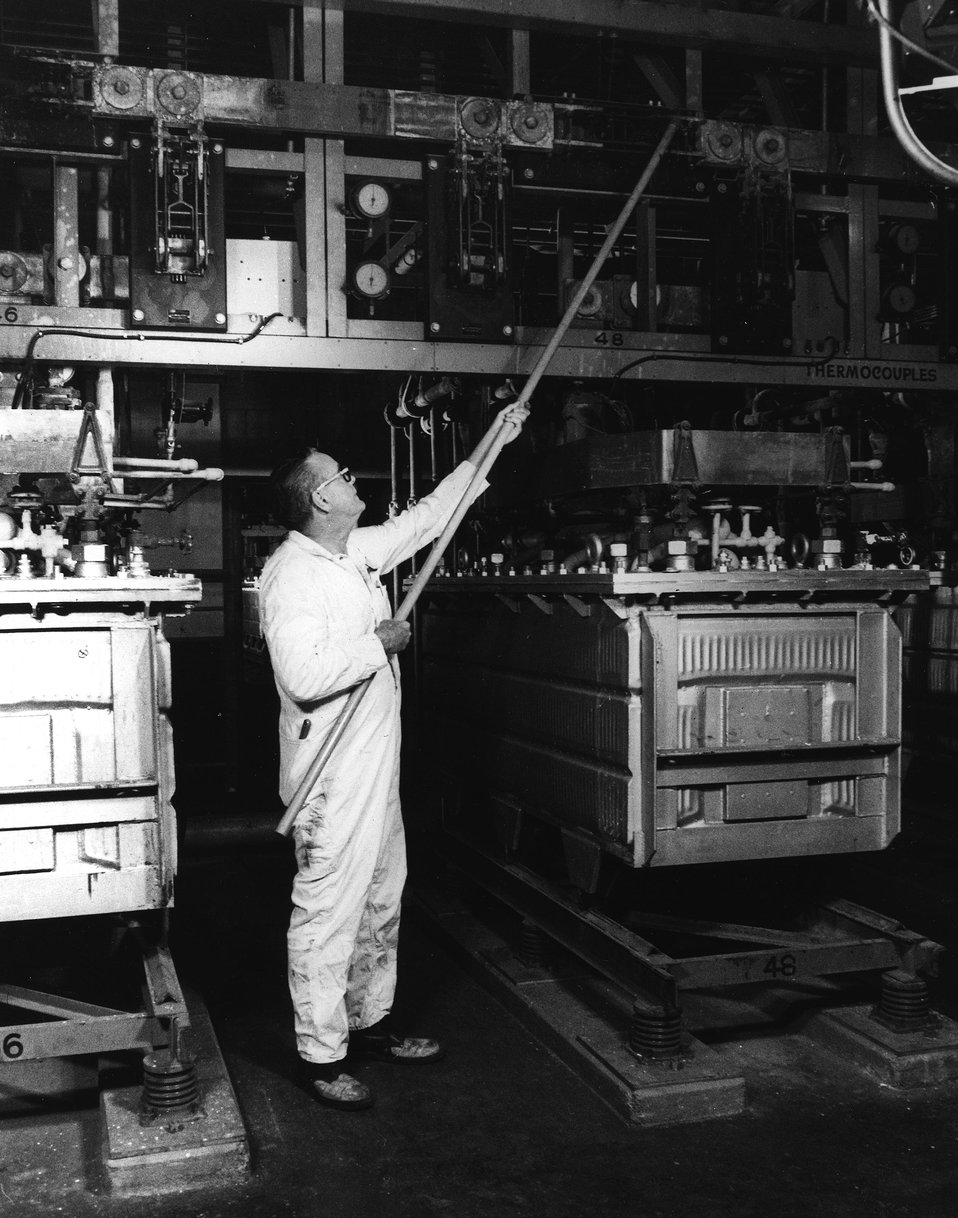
The U.S. Energy Research and Development Administration maintains a uranium feed material production facility at its Paducah (Kentucky) Gaseous Diffusion Plant. Here a worker makes an adjustment on fluorine production cell equipment. c. 1972